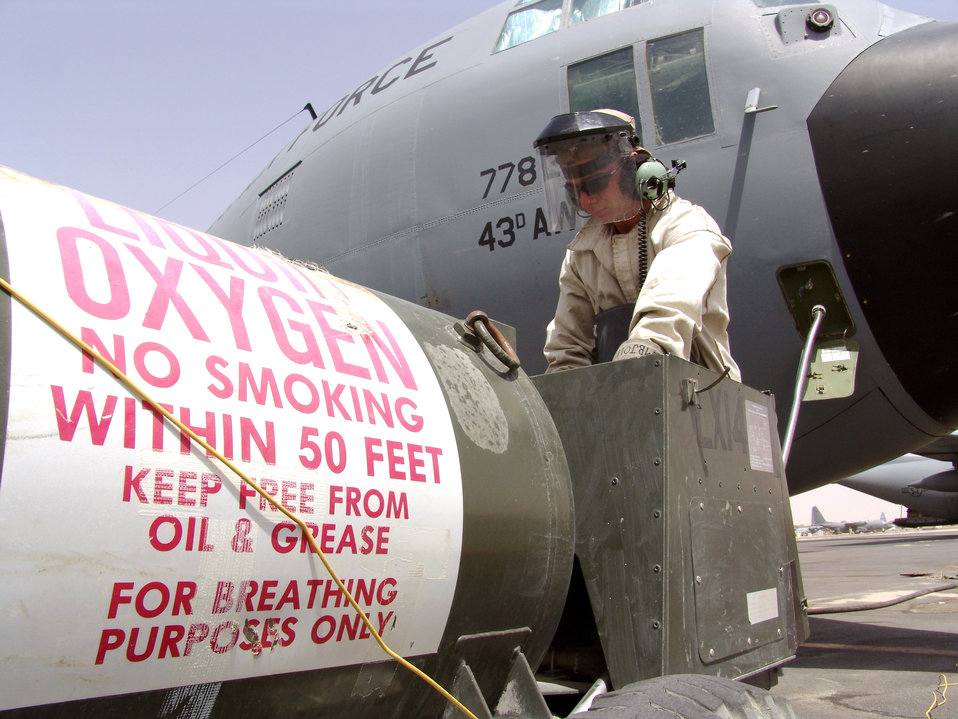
Ready for takeoff

SOUTHWEST ASIA -- Senior Airman Joseph Petty charges a C-130 Hercules oxygen system that supports breathing devices inside the aircraft. The 386th Air Expeditionary Wing is responsible for tactical airlift into and out of Iraq supporting Operation Iraqi Freedom. Airman Petty is a crew chief with the 386th Expeditionary Aircraft Maintenance Squadron at a forward-deployed location and is from Little Rock Air Force Base, Ark.